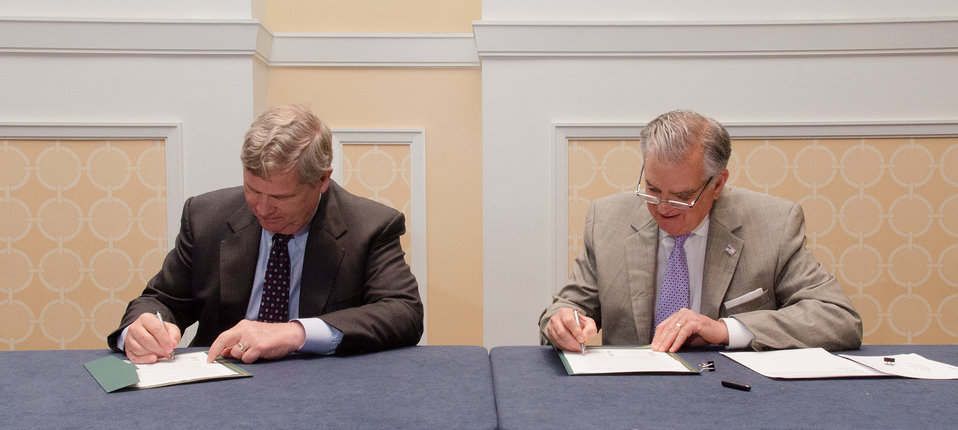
U.S. Department of Agriculture (USDA) Secretary Tom Vilsack (left), and Department of Transportation (DOT) Secretary Ray LaHood sign the Memorandum of Understanding (MOU) 'FARM to FLY 2.0 -- Working Together Resolution' extending for five years its agreement to work with DOT Federal Aviation Administration (FAA) and other partners to help develop a viable biofuel for the aviation industry. The MOU was signed at the Advanced Biofuels Leadership Conference at Gaylord National Harbor in Maryland, Monday, April 15, 2013.